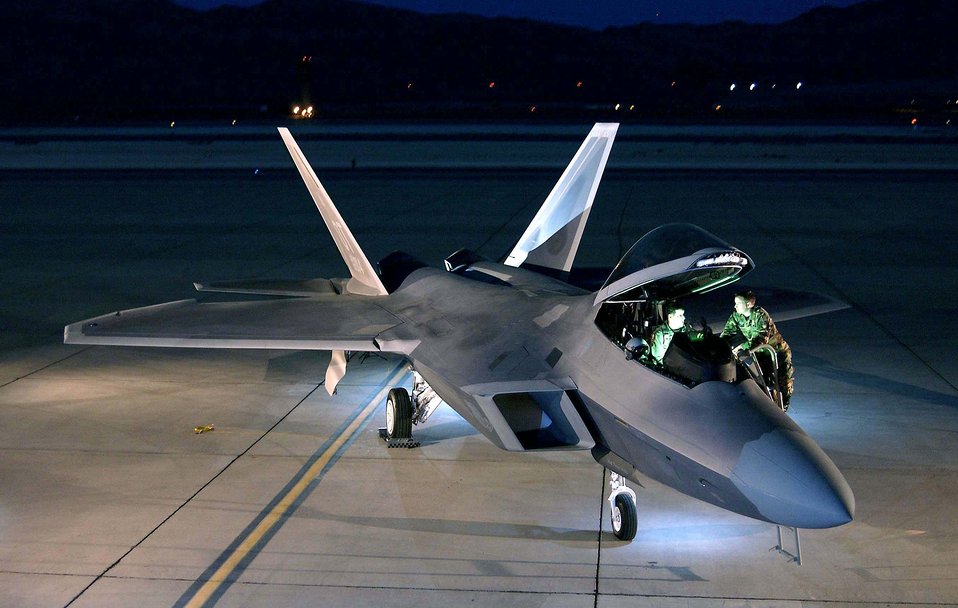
Nocturnal Raptor

NELLIS AIR FORCE BASE, Nev. -- An F/A-22 Raptor assigned to the 422nd Test and Evaluation Squadron sits on the flightline here. The Raptor is the newest fighter in the Air Force inventory. It is currently undergoing test and evaluation and is tentatively scheduled to be operational in late 2005.